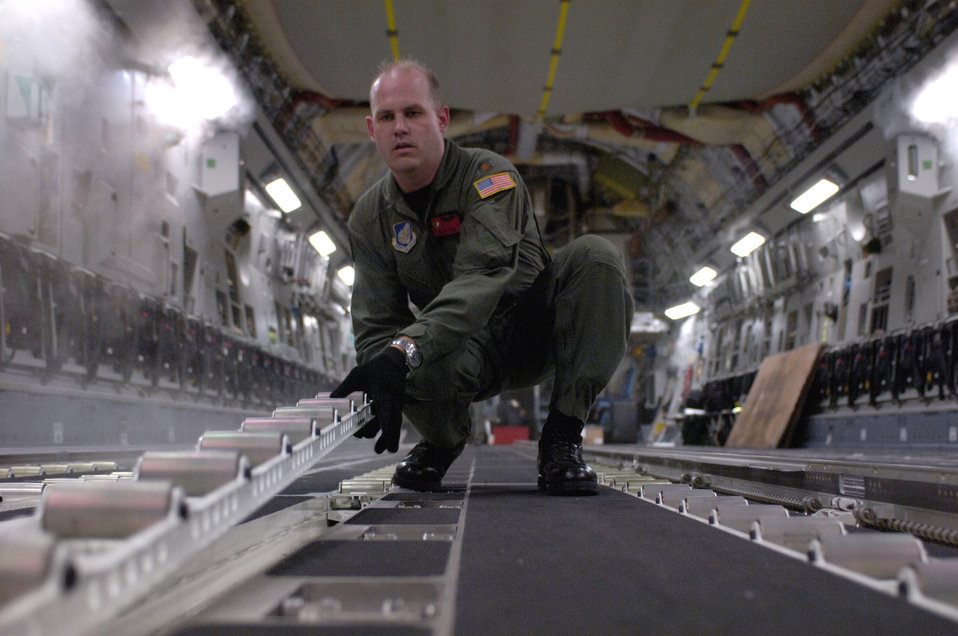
C-17s deliver supplies to Kauai

Maj. Matt Zehr turns over rollers to configure a C-17 Globemaster III for loading at Hilo International Airport, Hawaii Thursday, March 16, 2006. The C-17 delivered recovery equipment to the island of Kauai, Hawaii, after a dam burst, isolating thousands of people along the island's north shore. Major Zehr is with the 535th Airlift Squadron at Hickam Air Force Base, Hawaii.